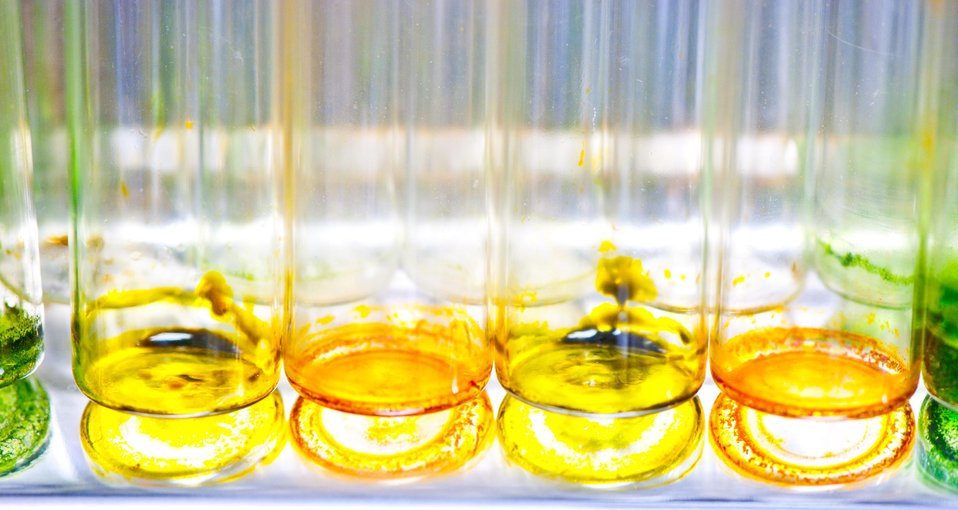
TEST TUBES WITH YELLOW AND GREEN ALGAE.

These test tubes in an NREL algae lab hold a selection of lipids, or oils that have been extracted from several algal strains. The tubes illustrate the colorful variety of work being done at NREL under a new aquatic species program.